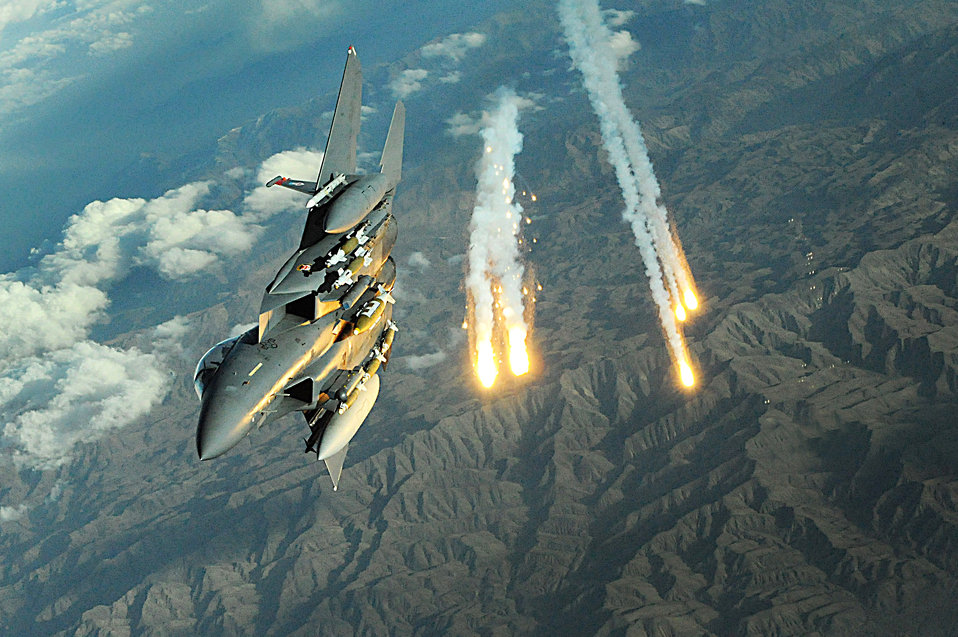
Go after this!

An F-15E Strike Eagle deploys countermeasure flares Nov. 12 over Afghanistan. The aircraft is assigned to the 391st Expeditionary Fighter Squadron at Bagram Airfield, Afghanistan.